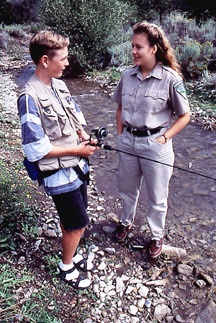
Environmental Education Fire Workshop Timberline High School Fall 2000